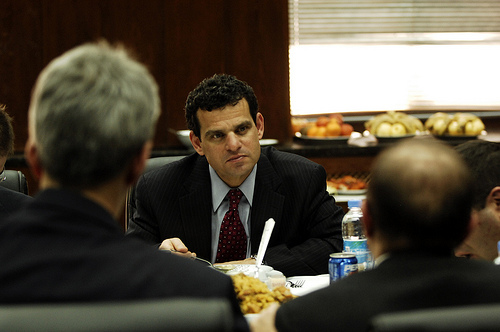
David Cohen in Afghanistan

Assistant Secretary for Terrorist Financing David S. Cohen met with senior officials in Afghanistan and Pakistan from February 10-12.